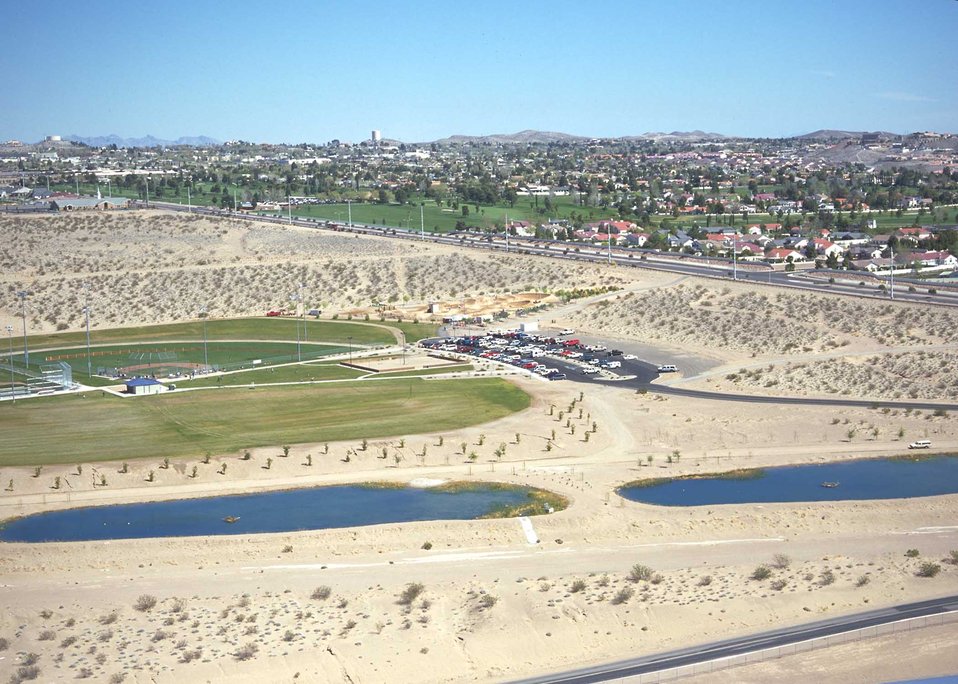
Final ponds on constructed wetland in Boulder City, NV.